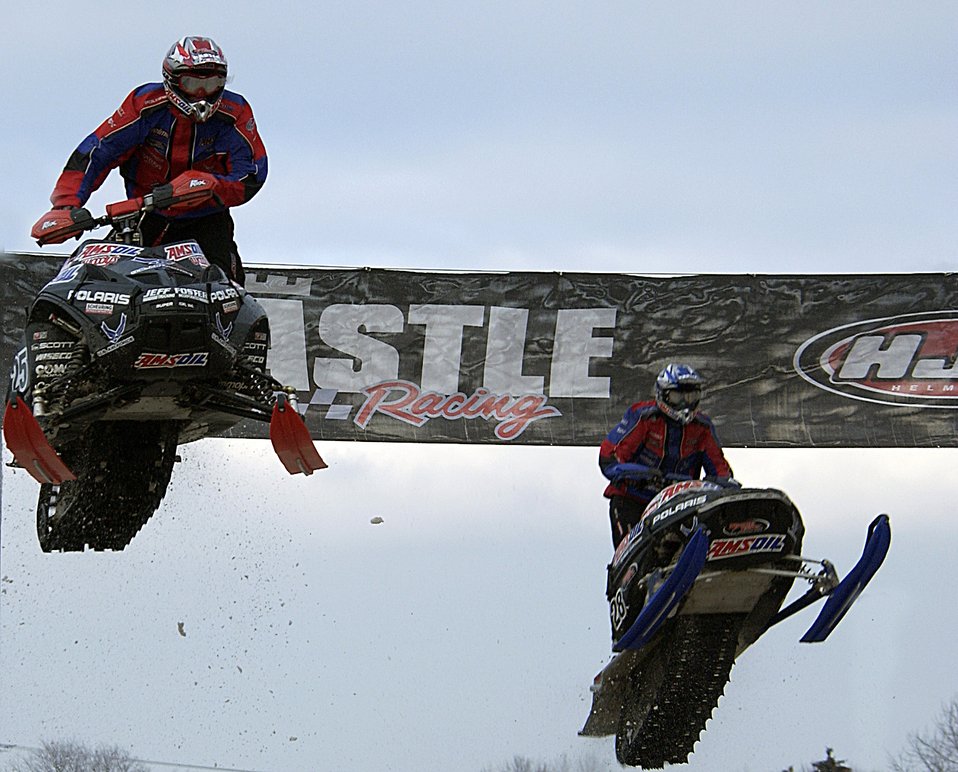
Winning 'sno' problem

GREEN BAY, Wis. -- D.J. Eckstrom (left) and Justin Tate hit the finish-line jump during the Snocross Pro Stock National race at Lambeau Field here March 7. The Air Force is a secondary sponsor with the AMSOIL/Polaris Scheuring Speed Sports team. This is the third year the Air Force has been involved with the team.